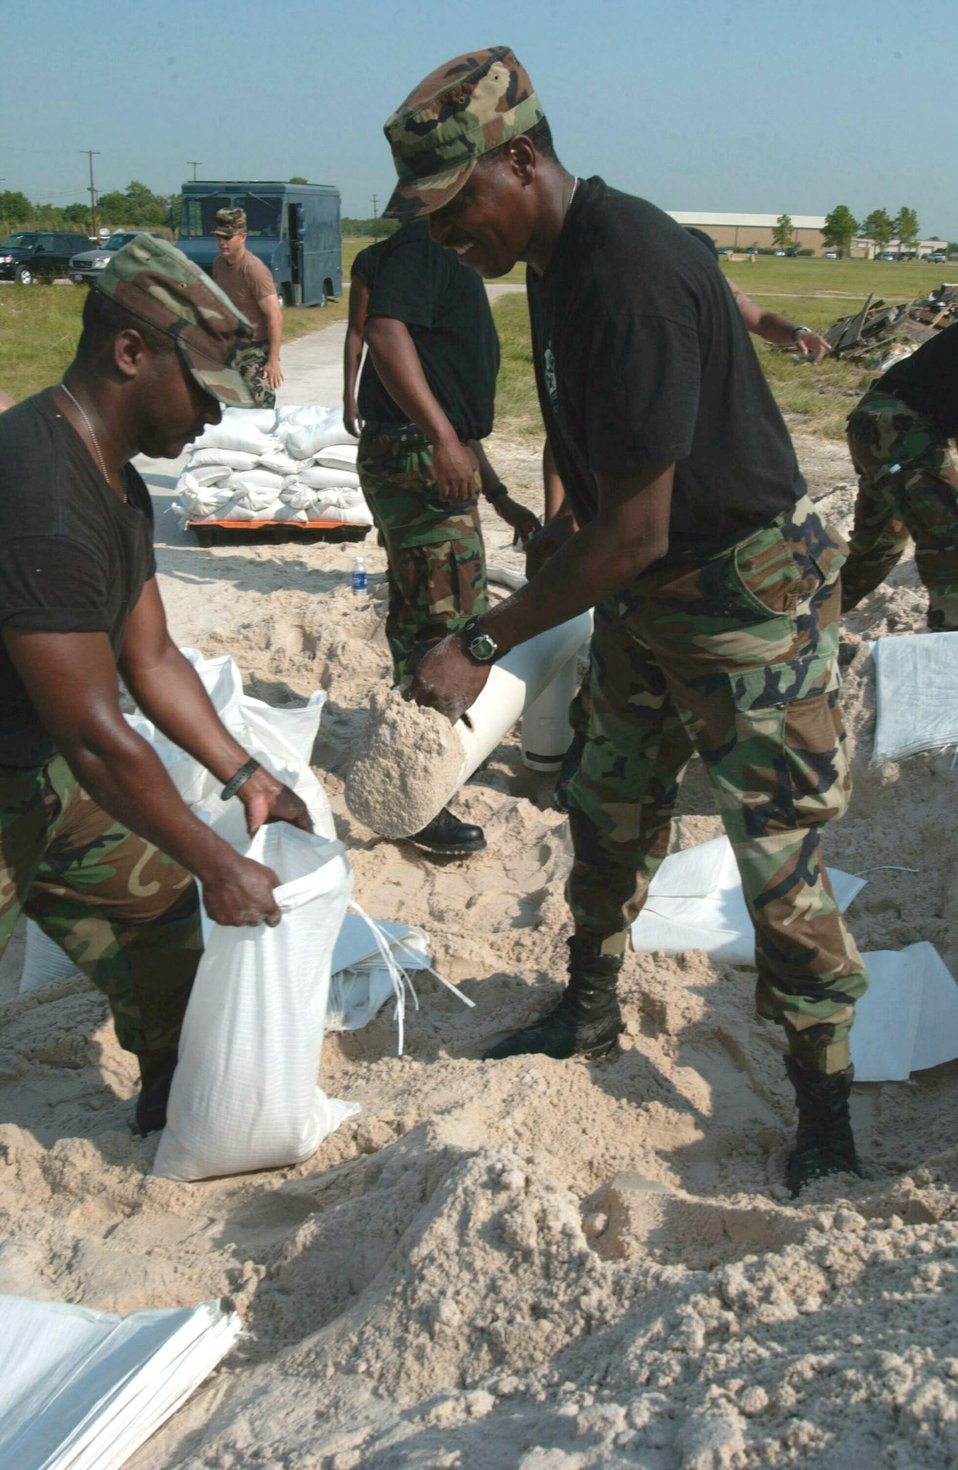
Preparing for the storm

ELLINGTON FIELD, Texas -- With the third worst hurricane in recorded history on the way, Airmen with the 147th Fighter Wing here fill sandbags Sept. 21 to protect buildings from flooding that Hurricane Rita is projected to bring. The hurricane is classified as a Category 4 and is expected to make landfall Sept. 24. Ellington Field is 17 miles southeast of Houston.